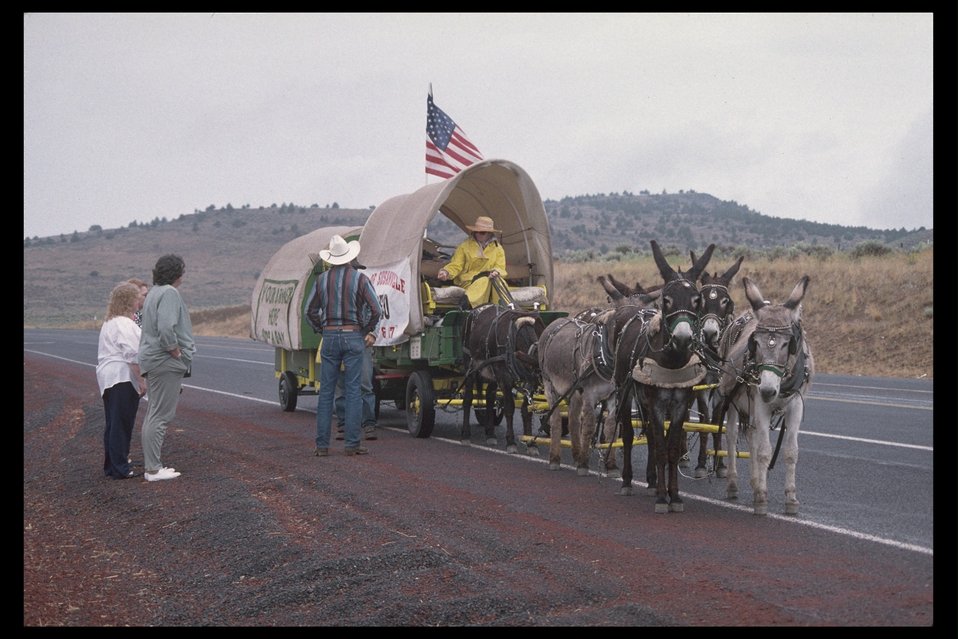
As publicity for Wild Horse and Burro program, adopted wild burros pull wagons on U.S. Highway 20.